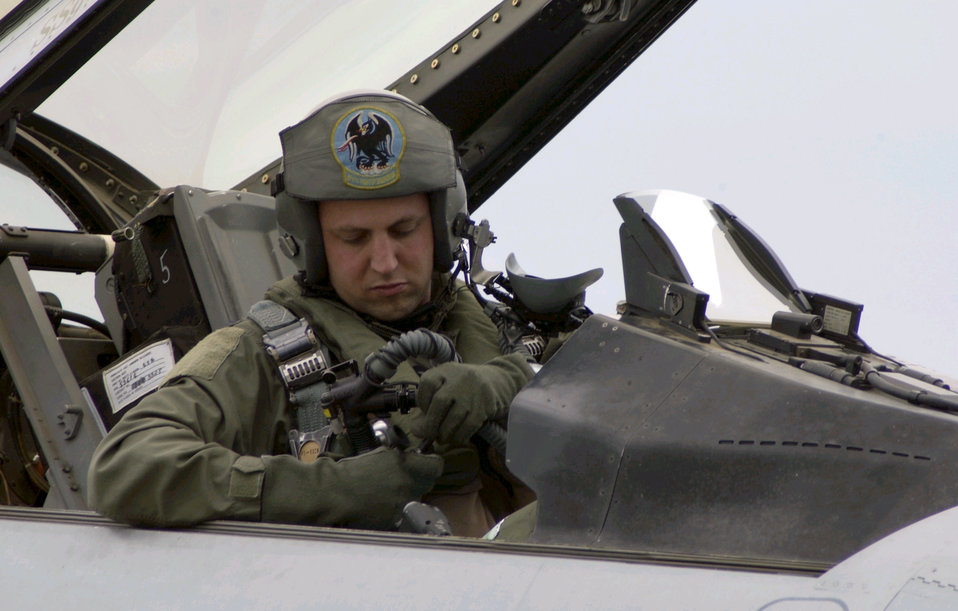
Getting ready

EIELSON AIR FORCE BASE, Alaska -- Capt. Seth Nehring prepares himself for his mission during operation Cooperative Cope Thunder here July 21. Captain Nehring is an F-16 Fighting Falcon pilot with California Air National Guard's 194th Fighter Squadron in Fresno.